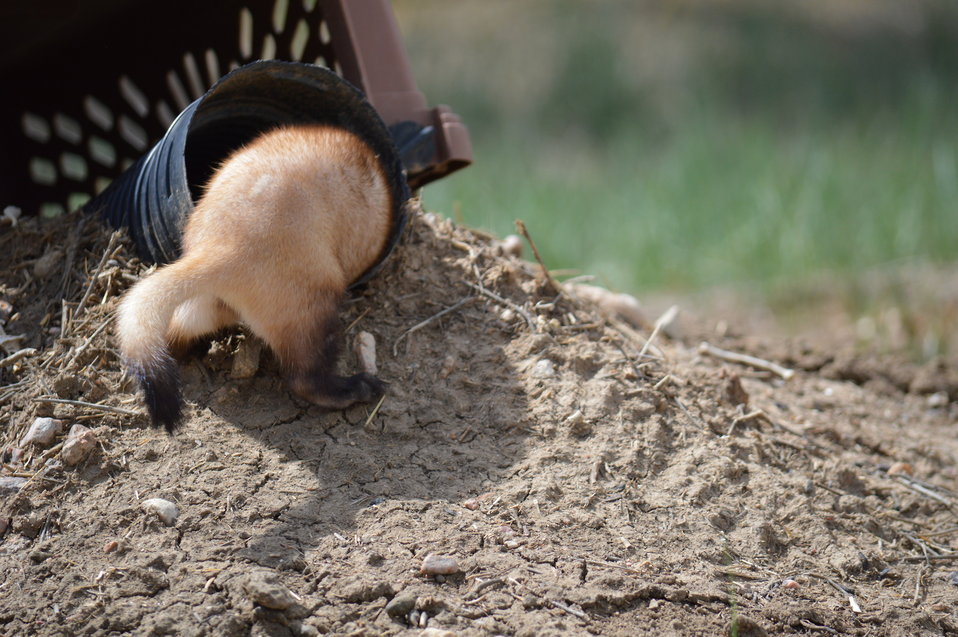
Interns visit the NBFFCC

In the summer of 2012, USFWS Region 6 interns visited the National Black-footed Ferret Conservation Center (NBFFCC) in Colorado to learn how the program reintroduces the endangered Black-footed ferret back into its native habitat.